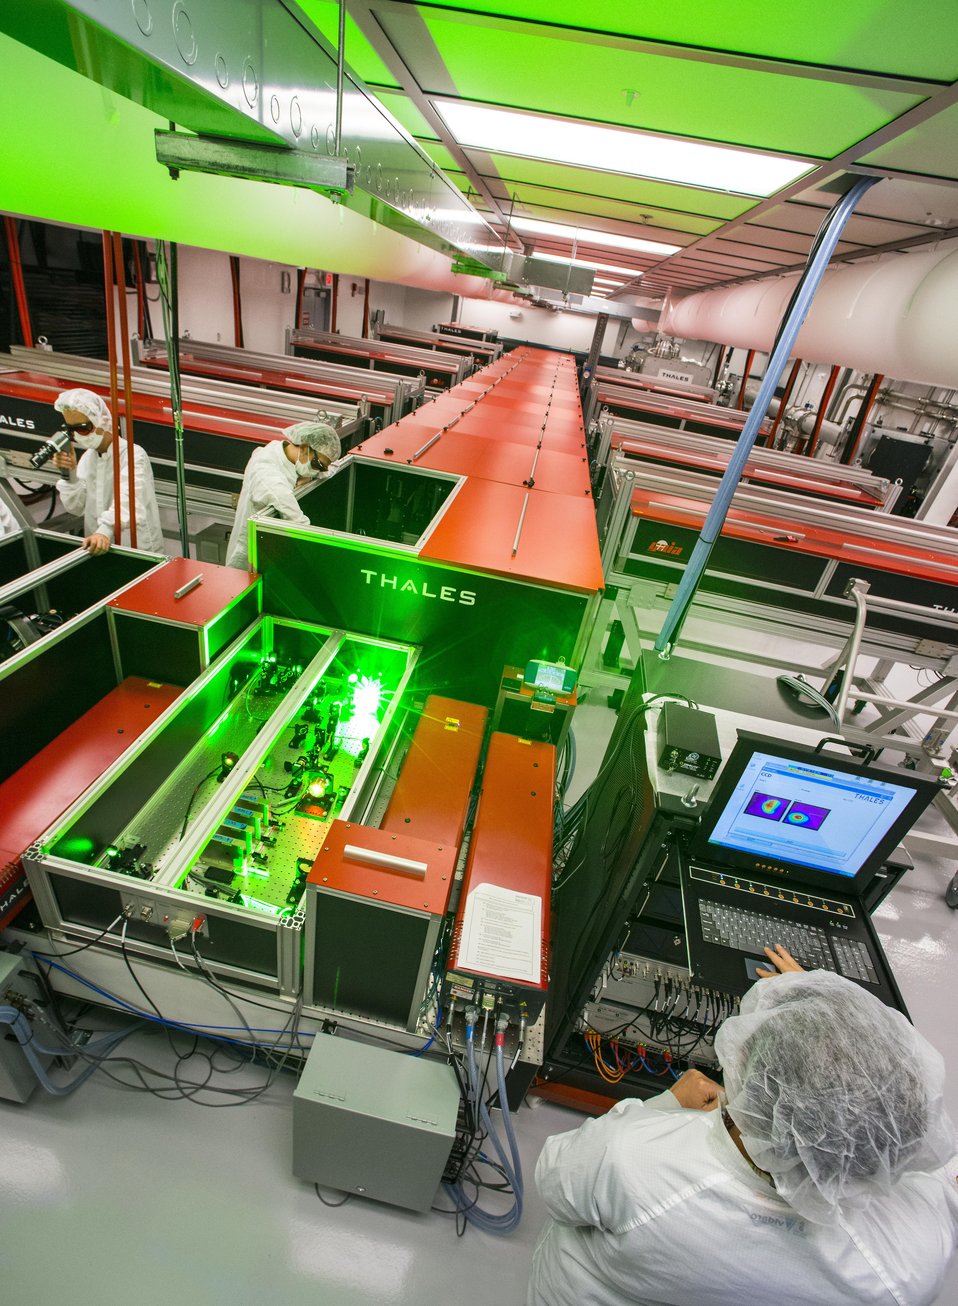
BELLA, the Berkeley Laboratory Laser Accelerator will create an experimental facility for further advancing the development of laser-driven acceleration.

BELLA's unique attribute is the ability to use laser light to accelerate an electron beam to 10 GeV (10 billion electron volts) or more in the comparatively short distance of approximately one meter.